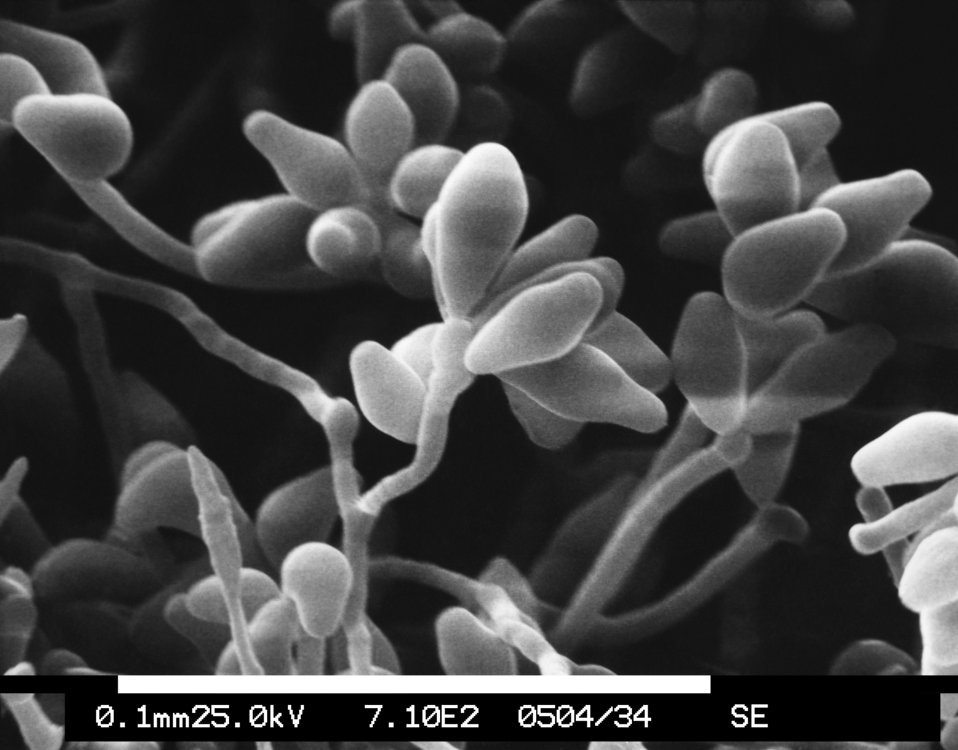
This scanning electron micrograph (SEM) depicts a magnified view of a colony of the dematiaceous filamentous fungus Curvularia geniculata, revealing the morphologic details of the organism's hyphae, and conidiophores topped with spore-containing conidia.